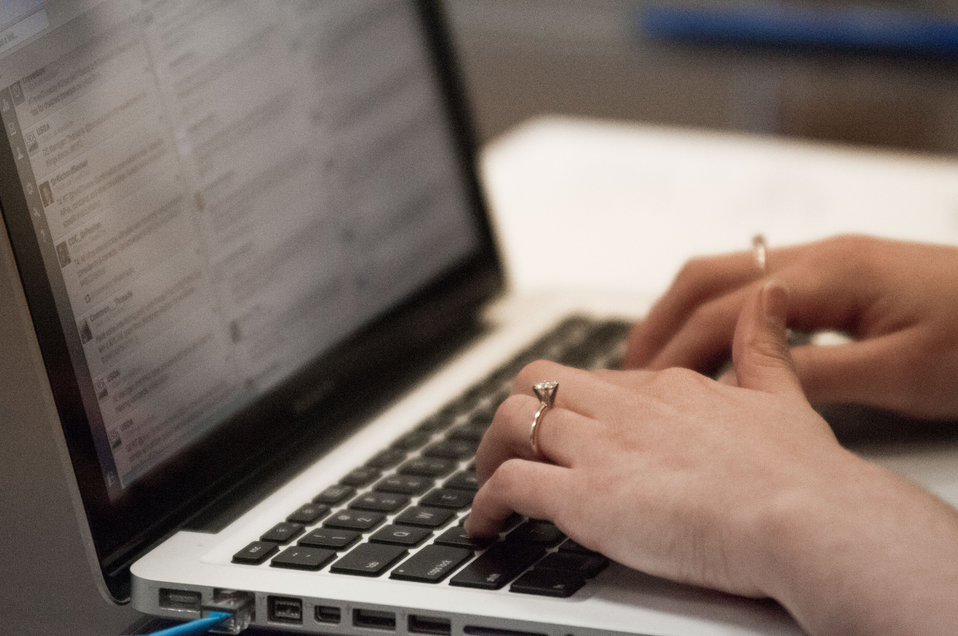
Agriculture Deputy Secretary Kathleen Merrigan, hosts a live Twitter chat focused on the Department’s support of local and regional food systems and the recent release of the 2.0 version of the Know Your Farmer, Know Your Food Compass on Tuesday, July 24, 2012, in Washington, D.C. Deputy Secretary Merrigan utilized her staff and other subject matter experts to provide useful answers to questions from the public during the #ASKUSDA Virtual Office Hours on Local Food.